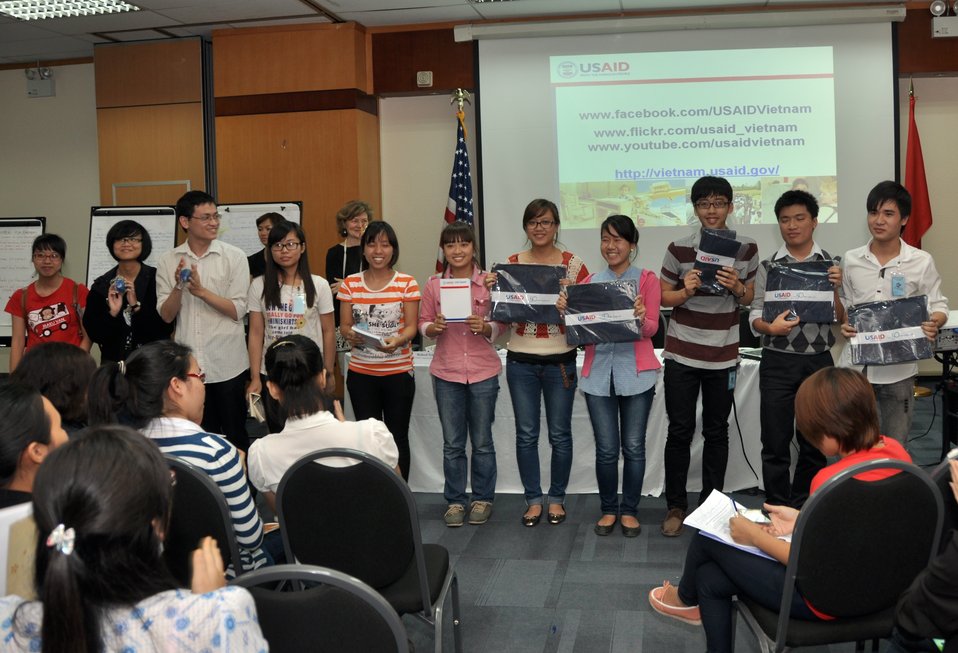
Vietnamese university students join the Business Plan Mashup exercise

Photo: @USAIDVietnam, November 16, 2012